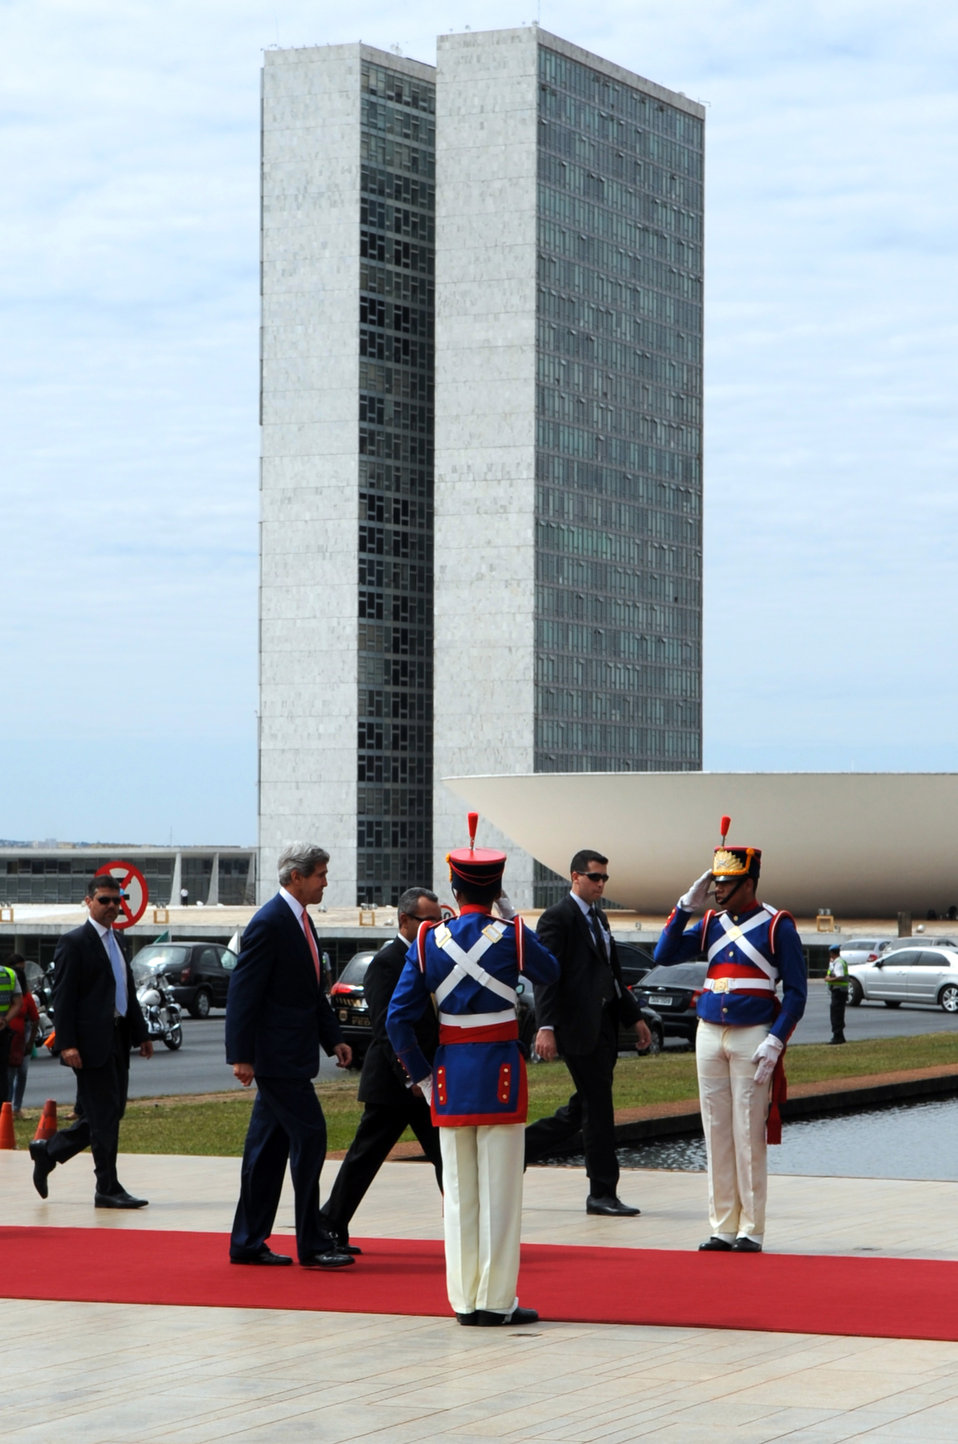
Secretary Kerry Arrives for a Meeting With Brazilian Foreign Minister Patriota

U.S. Secretary of State John Kerry walks past an honor guard and the Brazilian Congress building as he arrives at Itamaraty Place, the country's Ministry of Foreign Affairs, for a meeting with Brazilian Foreign Minister Antonio Patriota in Brasilia, Brazil, on August 13, 2013.